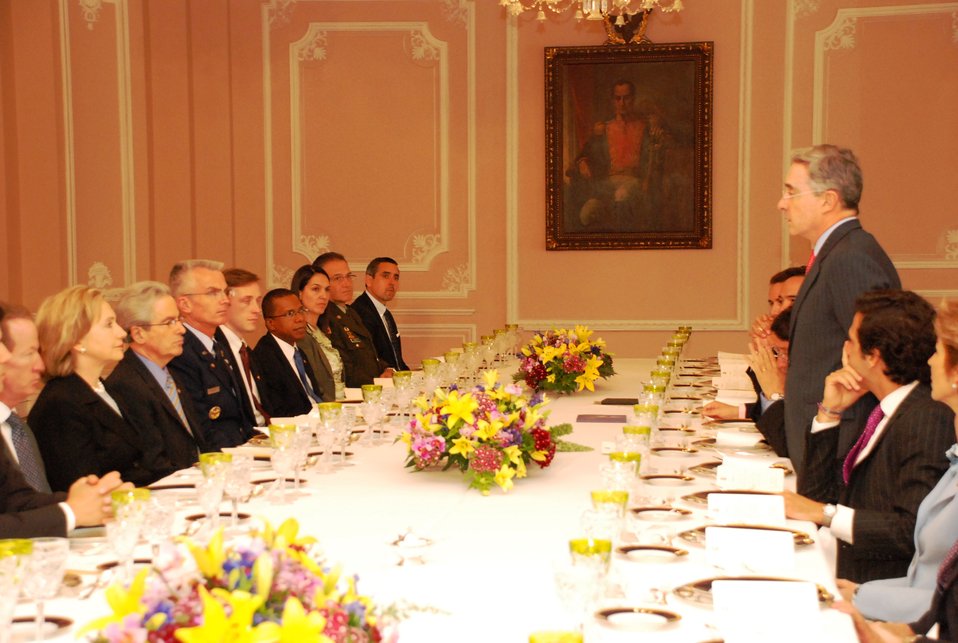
Secretary Clinton Attends Luncheon Hosted By Colombian President Uribe

Colombian President Uribe welcomes U.S. Secretary of State Hillary Rodham Clinton to a luncheon with his cabinet in Bogotá, Colombia, on June 9, 2010.